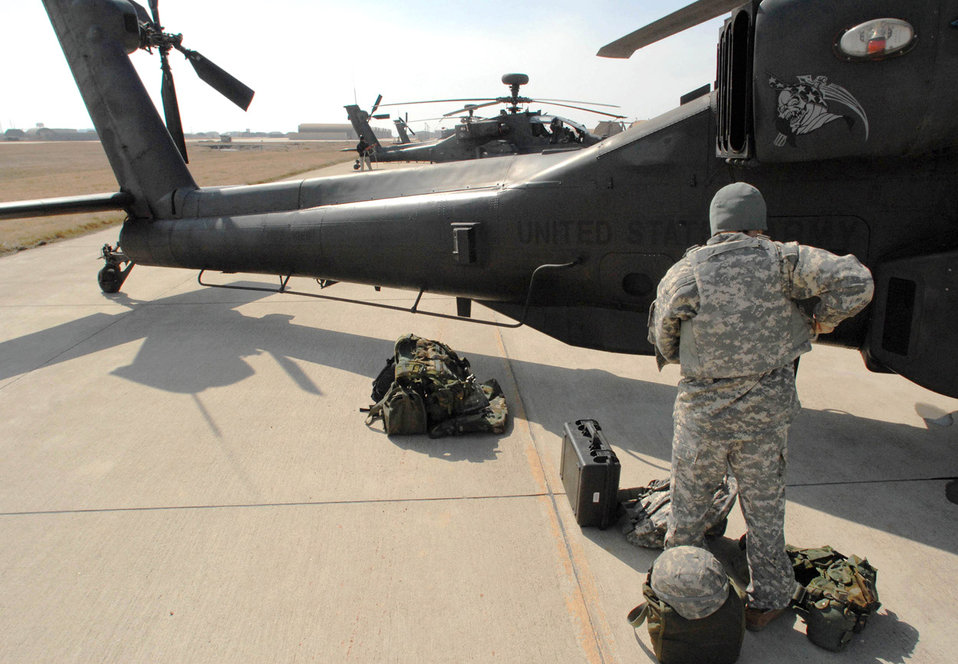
Korea Air Component Comand commander holds 6 ACCES

Pilot Capt. Ashley Lee unloads after touching down in an AH-64 Apache helicopter March 1 at Kunsan Air Base, South Korea. The Apache's arrived from Camp Humphrey's, Bravo Company 4-2, as part of the Key Resolve/Foal Eagle Exercise, enhancing combat readiness and joint interoperability.